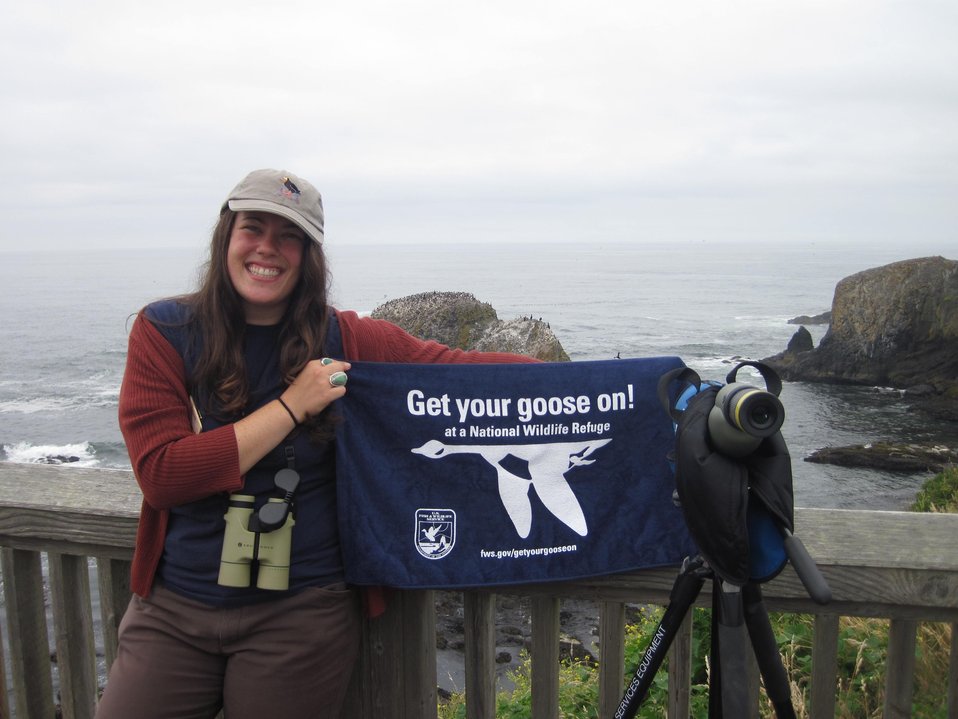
Get Your Goose On!

Octavia Sola', Wildlife Education Intern Gets Her Goose On at Oregon Islands NWR seabird viewing deck at Yaquina Head Outstanding Natural Area.